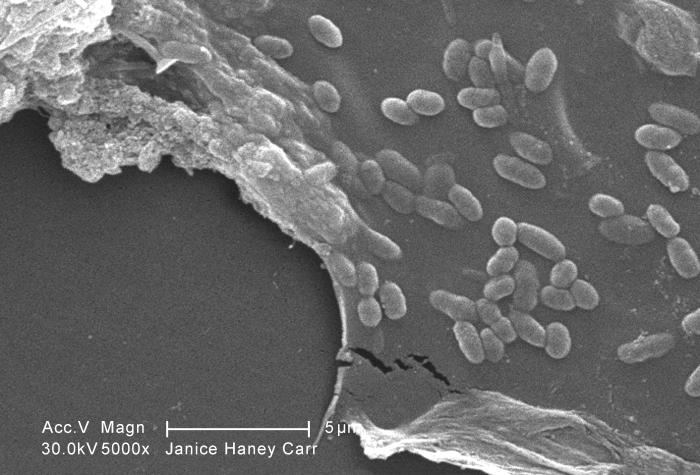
This scanning electron micrograph (SEM) of an untreated water specimen extracted from a wild stream mainly used to control flooding during inclement weather, revealed the presence of unidentified organisms, which included bacteria, protozoa, and algae. In this particular image, a protective biofilm had been inhabited by numbers of what appeared to be unidentified bacterial microorganisms.